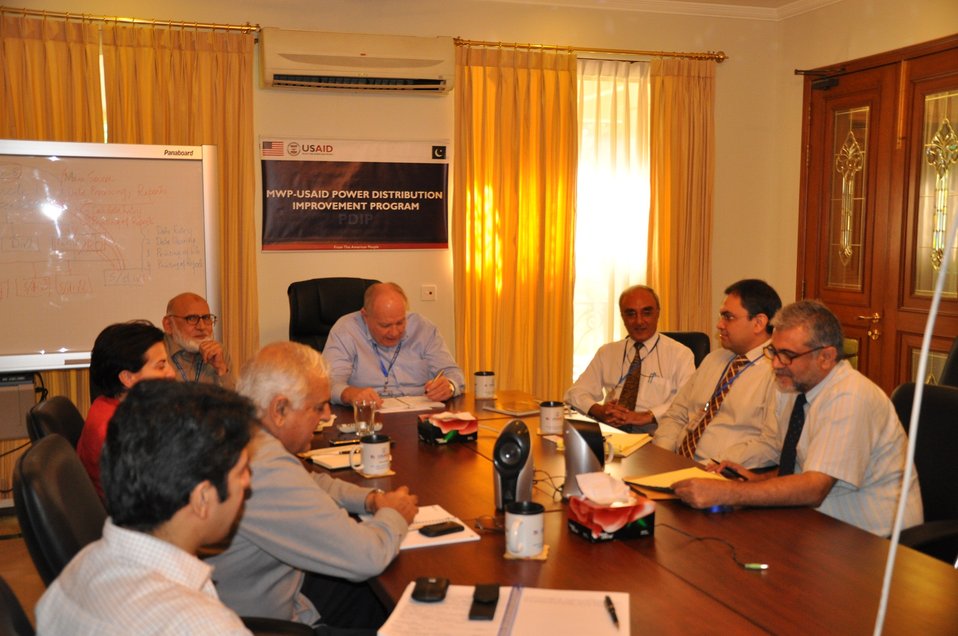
22 September, 2011 Discussion with World Bank Senior Staff for Mutual Interest

Power Distribution Improvement Program had a working meeting with World Bank's senior energy experts to discuss possible areas of collaboration between the USAID funded Power Distribution Improvement Program, and World Bank's existing US $ 256.7 Million Electricity Distribution and Transmission Improvement Project and other initiatives that World Bank plans to launch in the future. The purpose of the meeting was to exchange plans for respective activities in order to avoid duplication of efforts. The meeting ended with a plan for regular follow up meetings between the PDP Joint Implementation Task Force and World Bank.